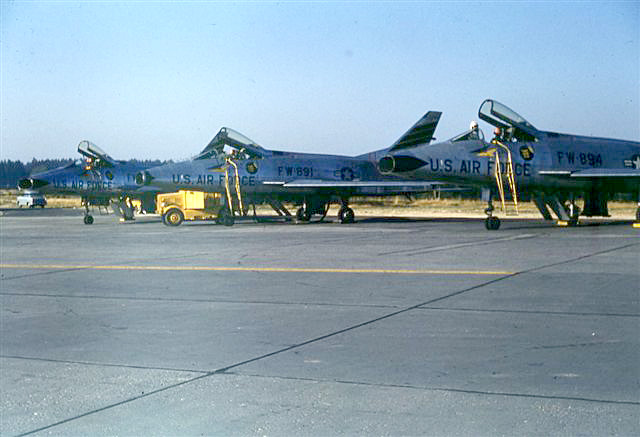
F-100Cs sitting on flightline

1950's -- F-100Cs sitting on the flightline at Hahn AB, Germany.